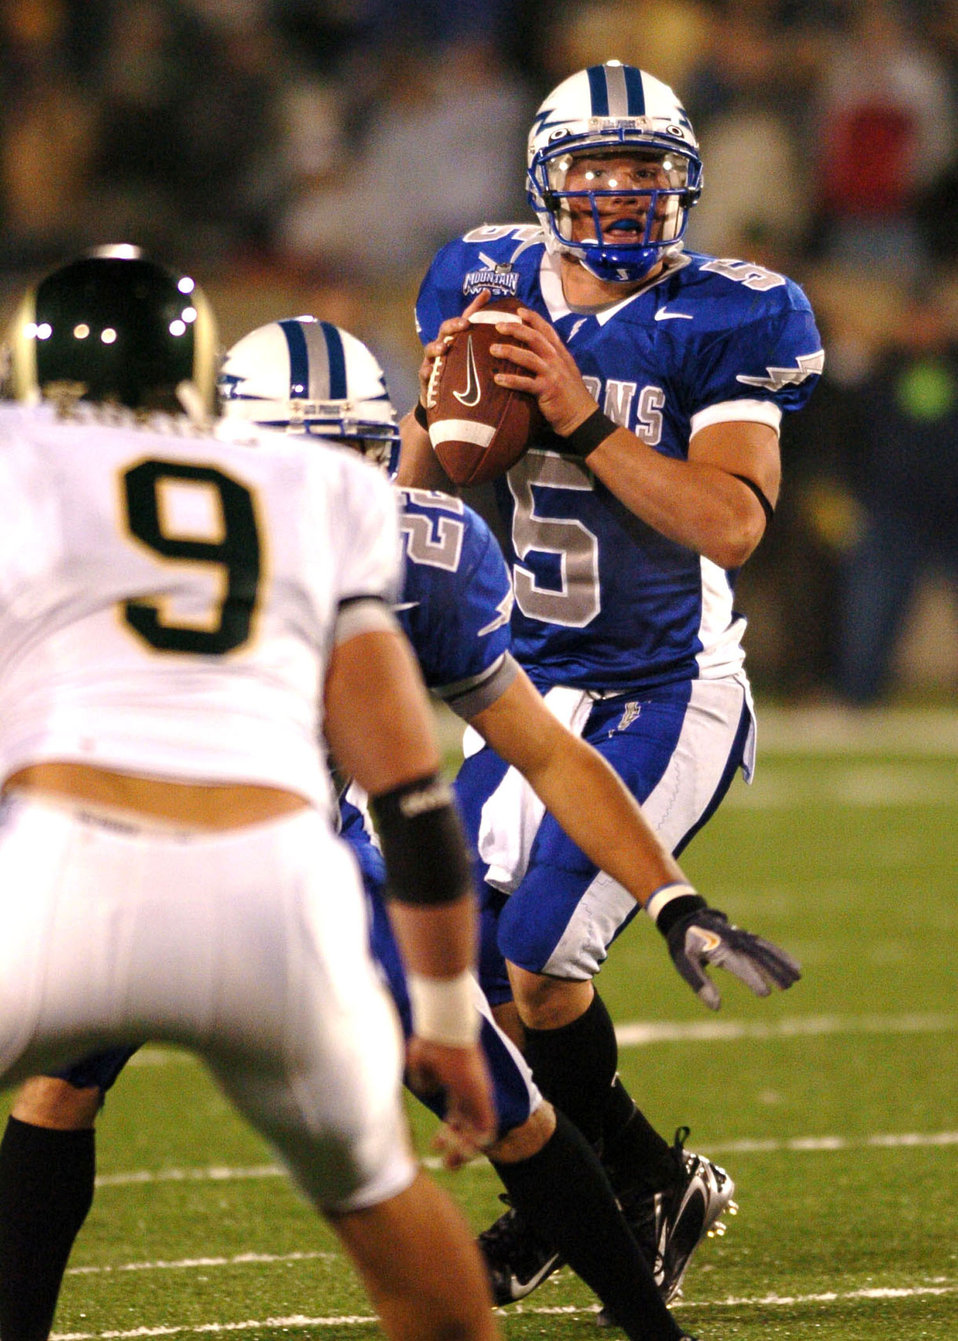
Field Survey

Air Force quarterback Shaun Carney surveys the field before finding wide receiver Victor Thompson in the end zone for the game-winning touchdown Thursday night, to cap a come-from-behind victory over cross-state rival Colorado State. Air Force won, 24-21.